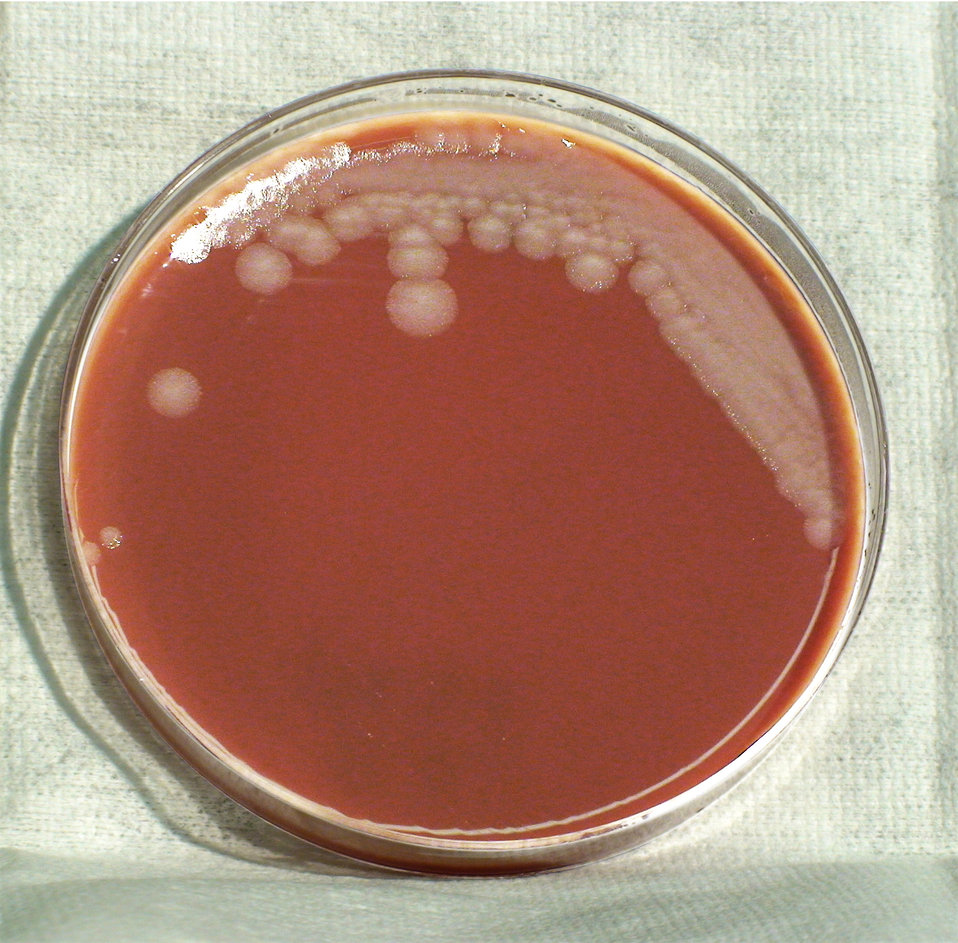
This photograph depicts the colonial morphology displayed by Gram-positive, Pasteur strain, Bacillus anthracis bacteria, which was grown on a medium of chocolate agar, for a 24 hour time period, at a temperature of 37�C. B. anthrax is the bacterial pathogen, which causes the disease known as anthrax.